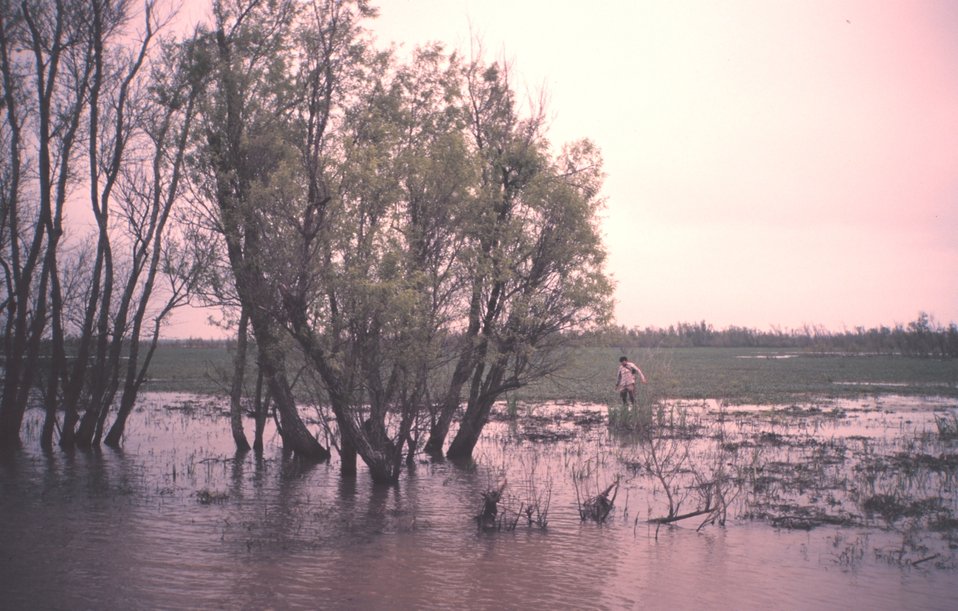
Marsh area with willow trees adjacent to lower Atchafalaya River